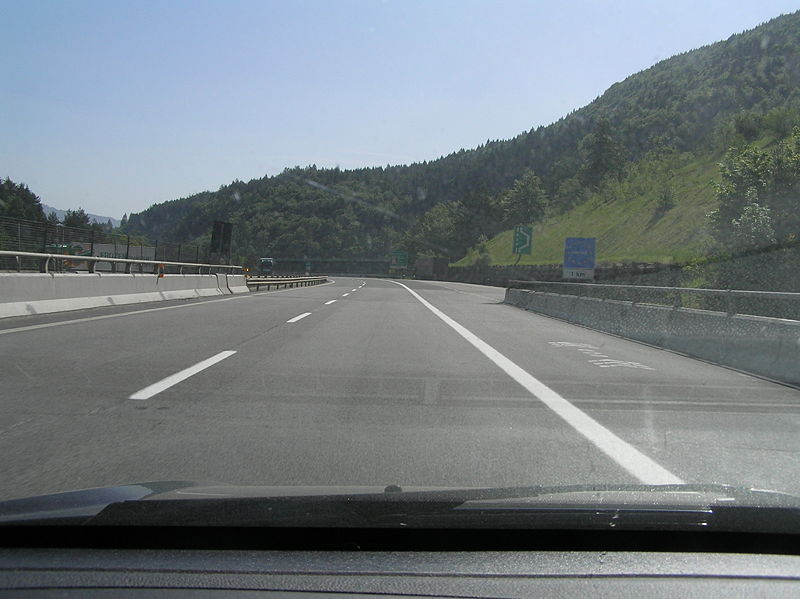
Italiano: Driving northbound, 1km before Coccau border between Italy and Austria / Autostrada A23 - Corsia Nord, 1km prima del confine di Coccau tra Italia e Austria